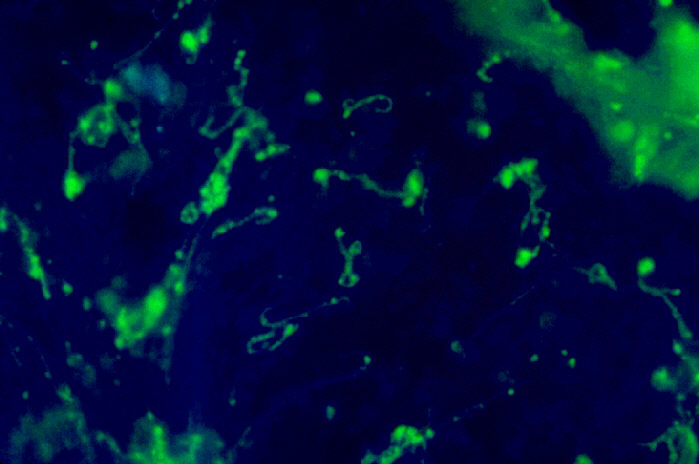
Leptospira bacteria, FA stain of liver impression smear.